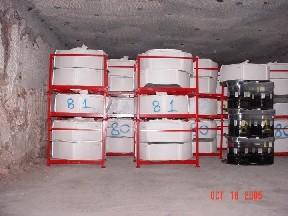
Waste disposal at WIPP

Waste disposal operations at the Waste Isolation Pilot Plant in Carlsbad, NM. The red stands each hold five 4,200 pound supersacks of magnesium oxide (MgO), which is used to absorb water and moisture from the air.